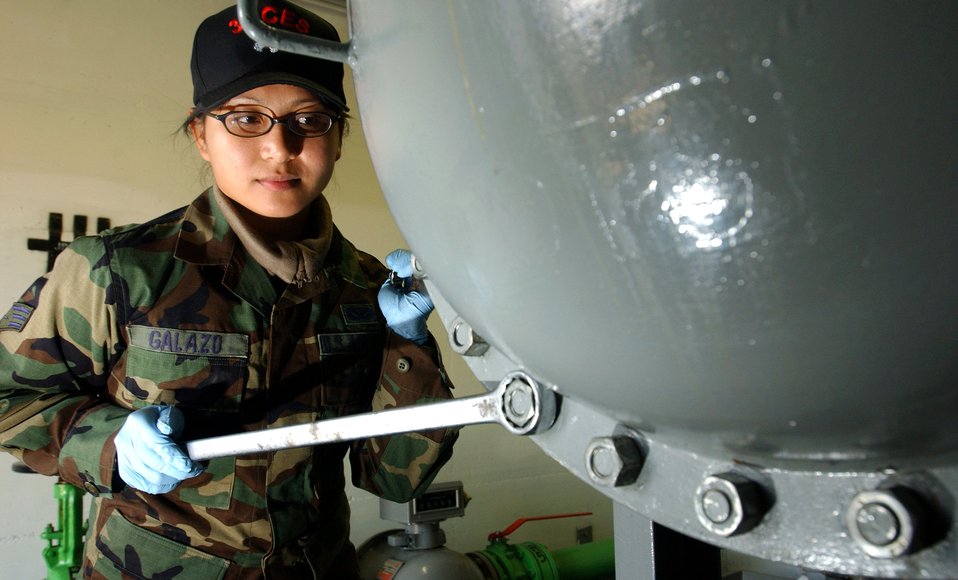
Fuel bolt

AVIANO AIR BASE, Italy --Senior Airman Christal Galazo unbolts a filter separator lid to ensure dirt is being removed from a fuel tank here March 21. Airman Galazo is a liquid fuels technician with the 31st Civil Engineer Squadron.